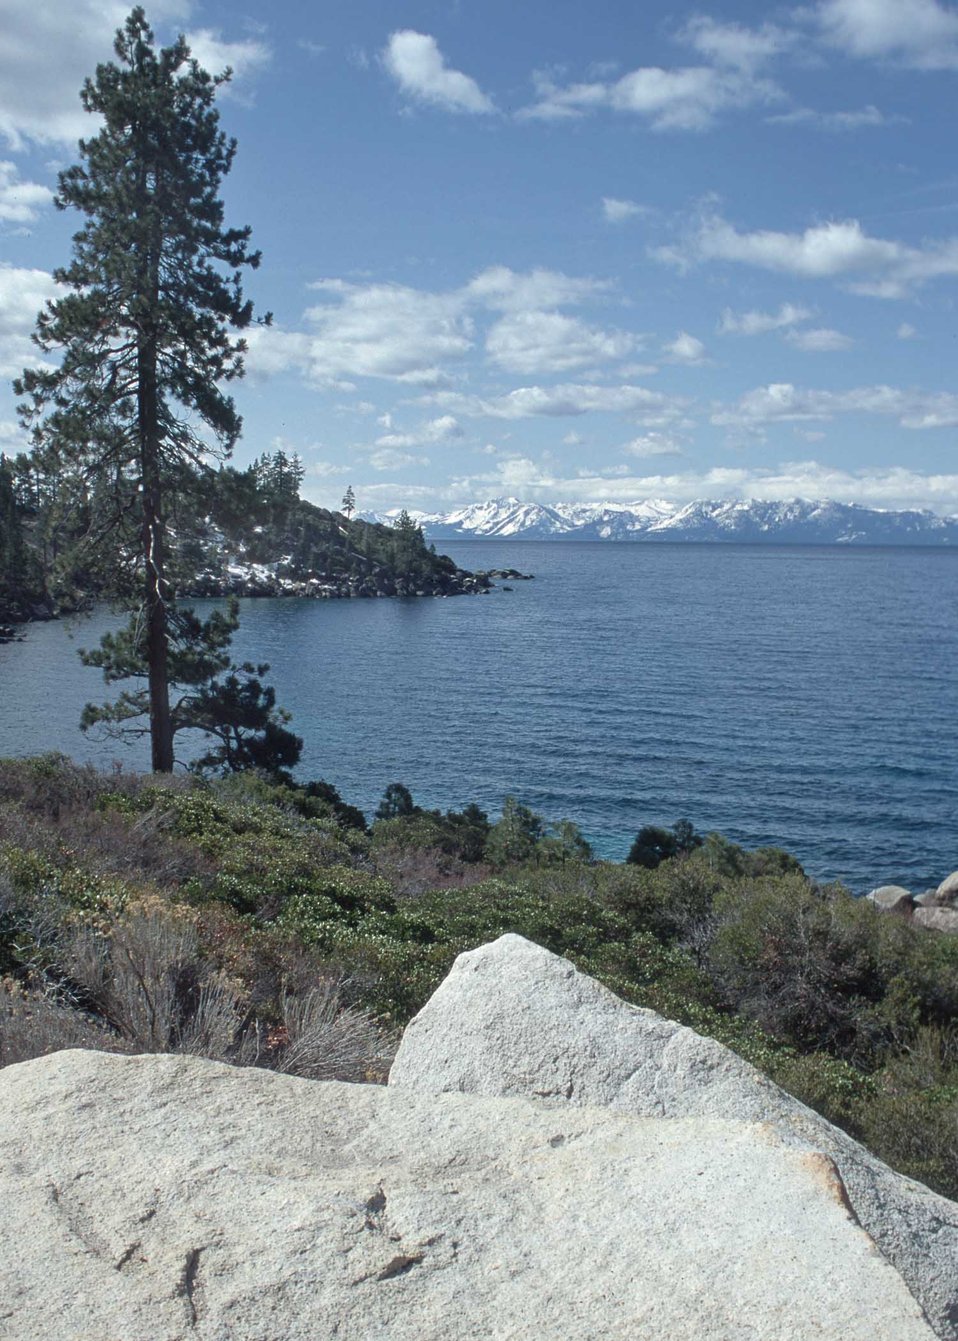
Lake Tahoe, Sierra Nevada mountains, Washoe County, NV.